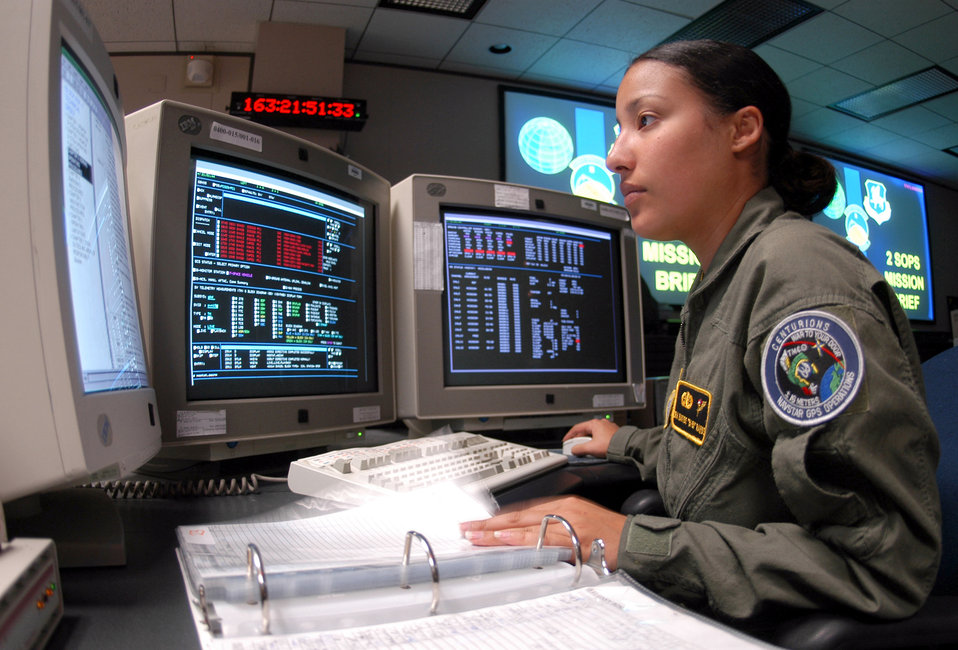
Controlling satellites

SCHRIEVER AIR FORCE BASE, Colo. -- Senior Airman Nayibe Ramos runs through a checklist during Global Positioning System satellite operations. The operations center here controls a constellation of 29 orbiting satellites that provides navigation data to military and civilian users worldwide. Airman Ramos is a satellite system operator for the 2nd Space Operations Squadron here.